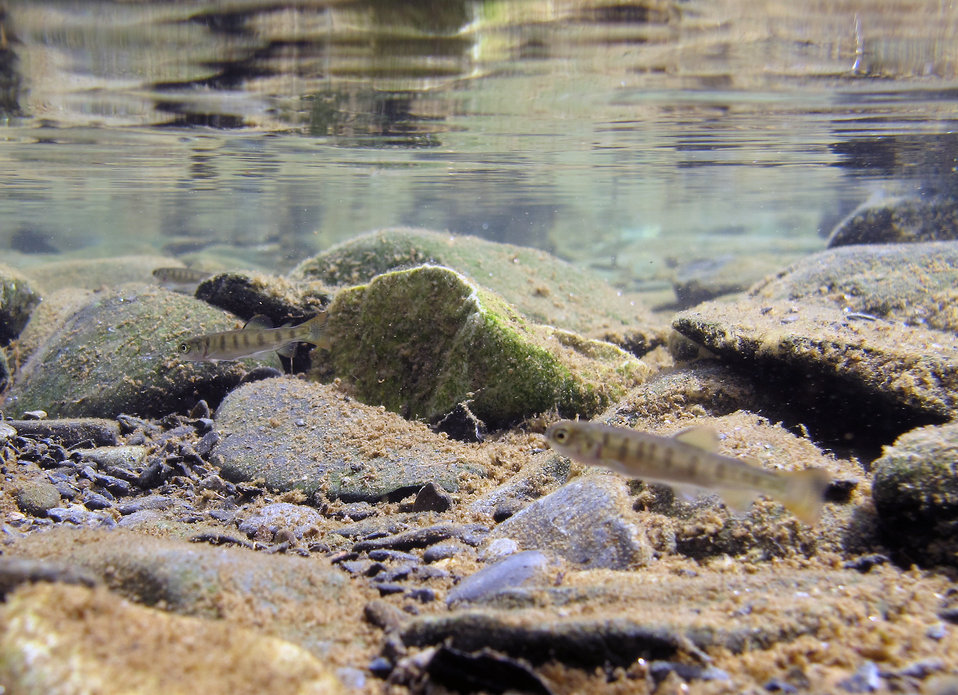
juvenile salmon near Russian/Kenai River confluence, Alaska